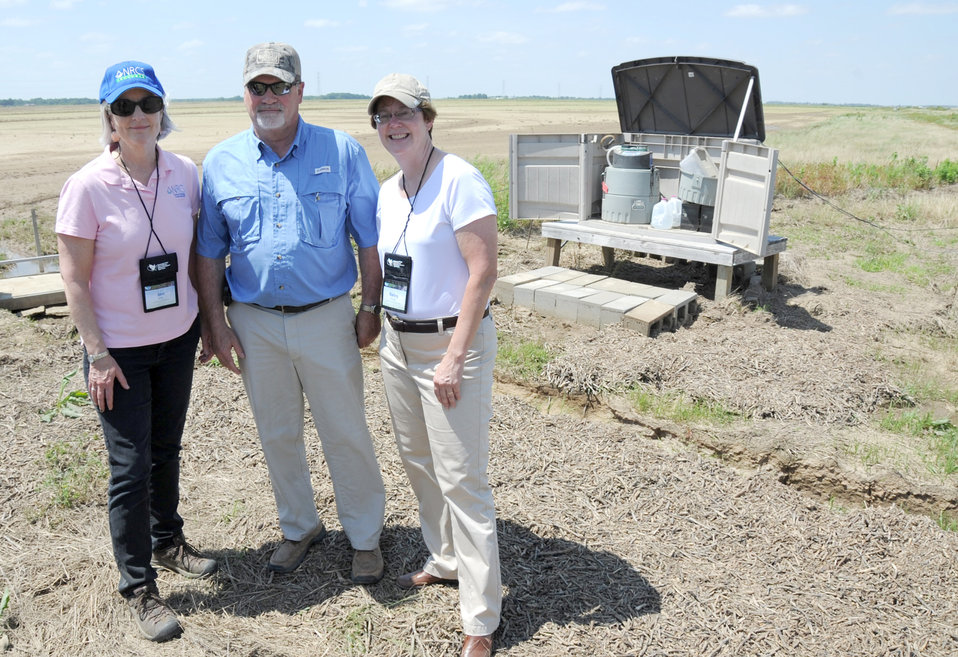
Mills EPA

Farm owner Terry Dabbs (center) gives U.S. Department of Agriculture (USDA) Natural Resources and Environment (NRE) Deputy Under Secretary Ann Mills (left) and Environmental Protection Agency (EPA) Water Acting Assistant Administrator Nancy Stoner (right) a tour of his farm.